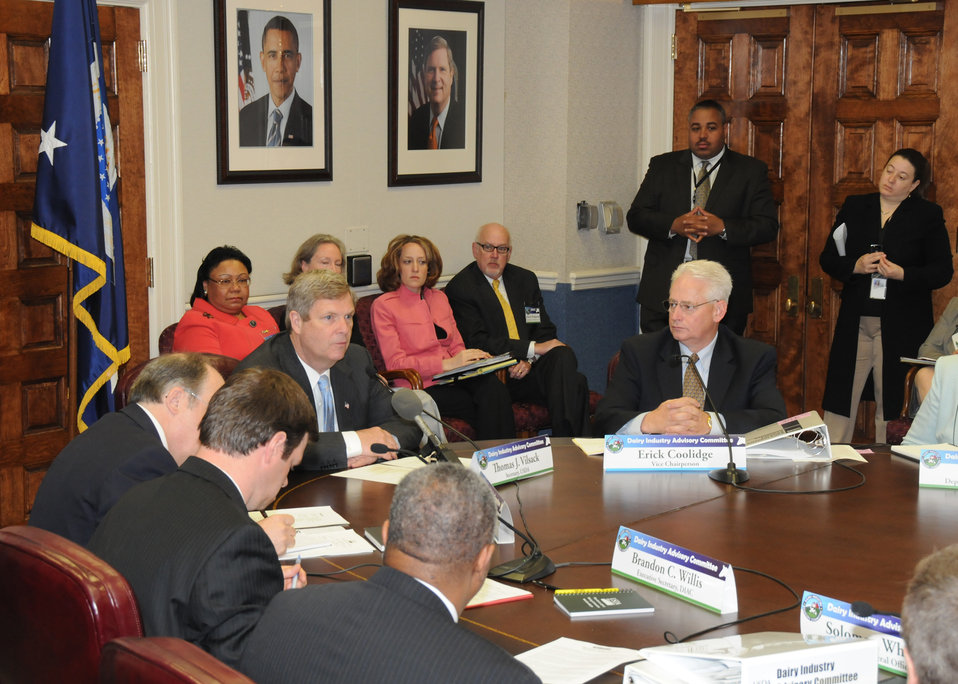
Agriculture Secretary Tom Vilsack spoke to the 17 member Dairy Industry Advisory Committee (DIAC) and dairy industry representatives in the Williamsburg room at the Department of Agriculture in Washington, D. C., on Tuesday, April 13, 2010. The committee, which was established by USDA in August 2009, was designed to advise the secretary on policy issues impacting the dairy industry. The three-day public meeting will allow members to review farm milk price volatility and dairy farmer profitability, and make recommendations on how USDA can best address the long- and short-term needs of the dairy industry. USDA photo 10di1306-16